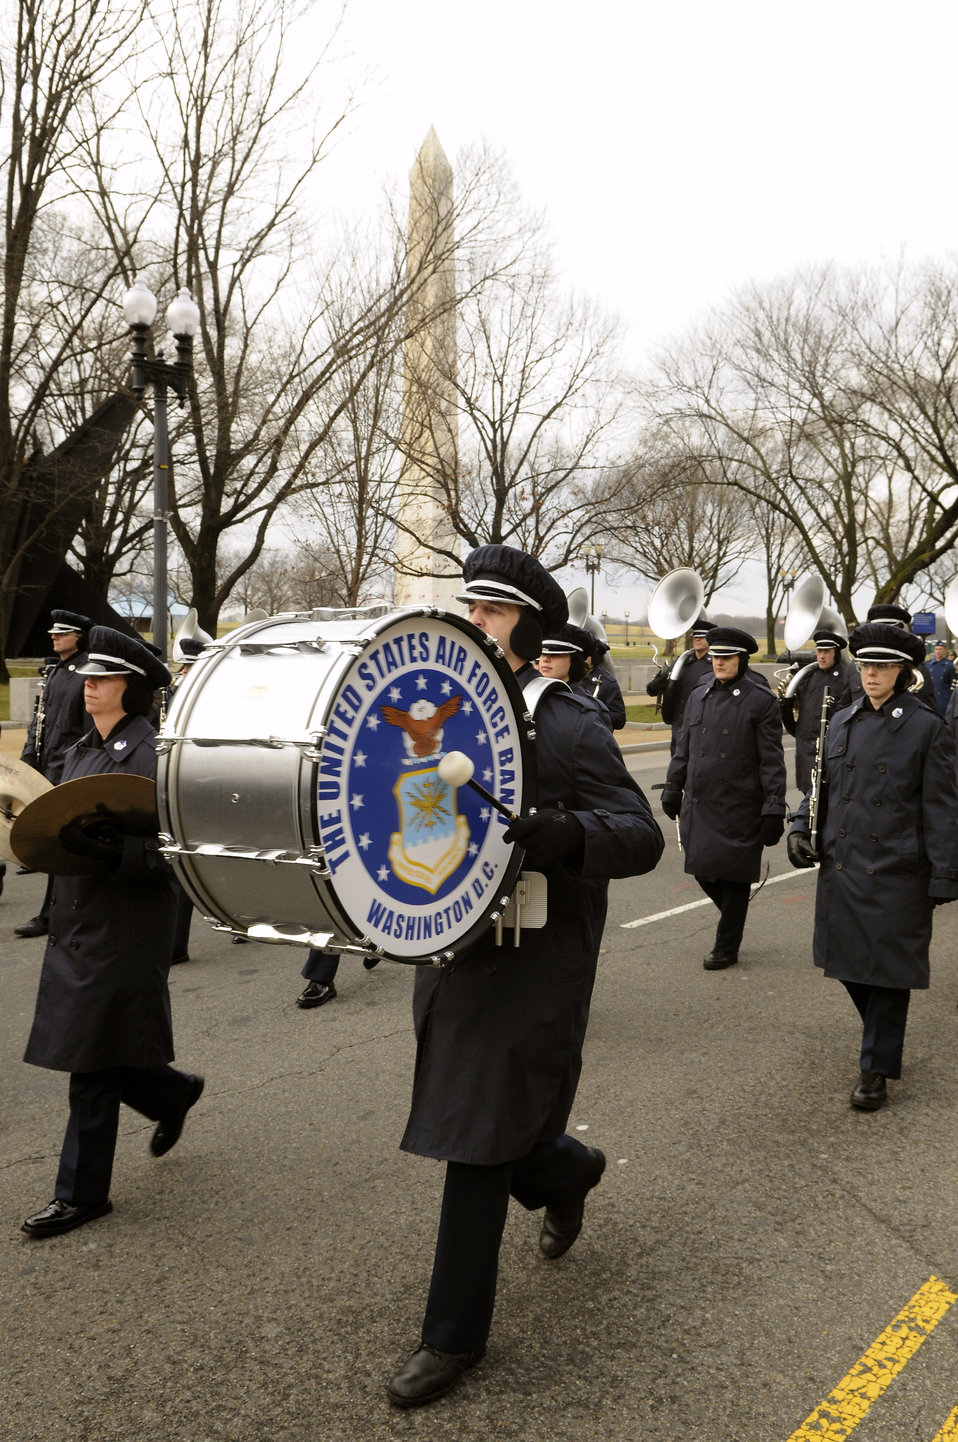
Practice makes perfect

Members of the Air Force Band march down Constitution Avenue during a practice run of the inauguration parade for President-elect Barack Obama Jan. 11 in Washington, D.C.